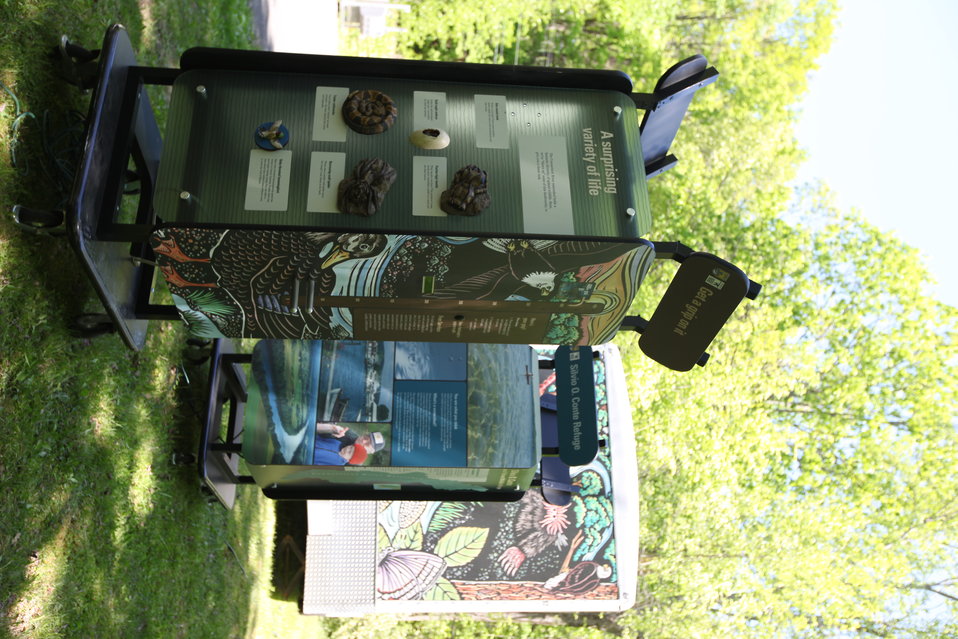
Youth Fishing Derby 2012

Megan Nagel/USFWS